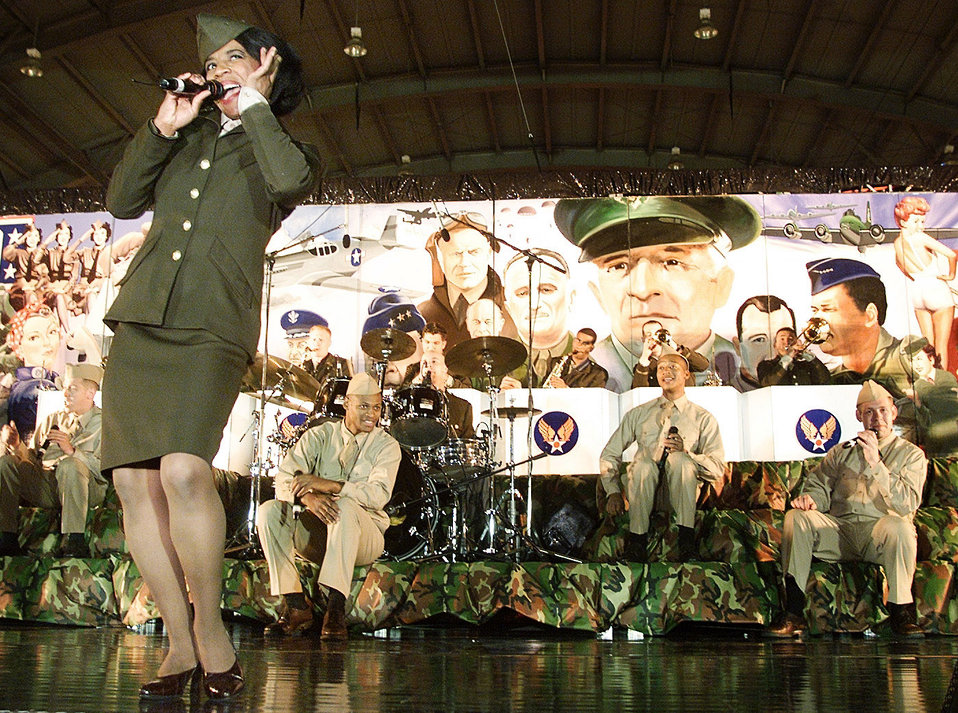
Tops in Blue

MACDILL AIR FORCE BASE, Fla. -- The Air Force Tops in Blue perform at the NFL Players Huddle Party here January 23, 2001. Personnel and aircraft from various bases around the nation are deployed to the base as part of a week of events leading up to Superbowl XXXV.